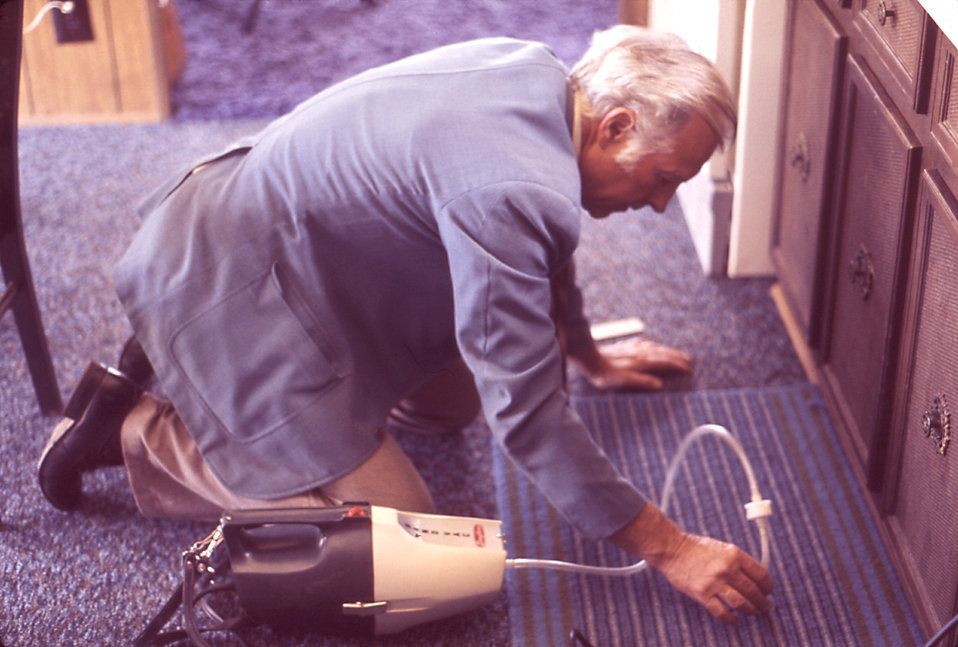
In 1976, excessive lead exposure was detected in 69% of 58 children whose mothers worked in a battery factory in Raleigh, N.C.